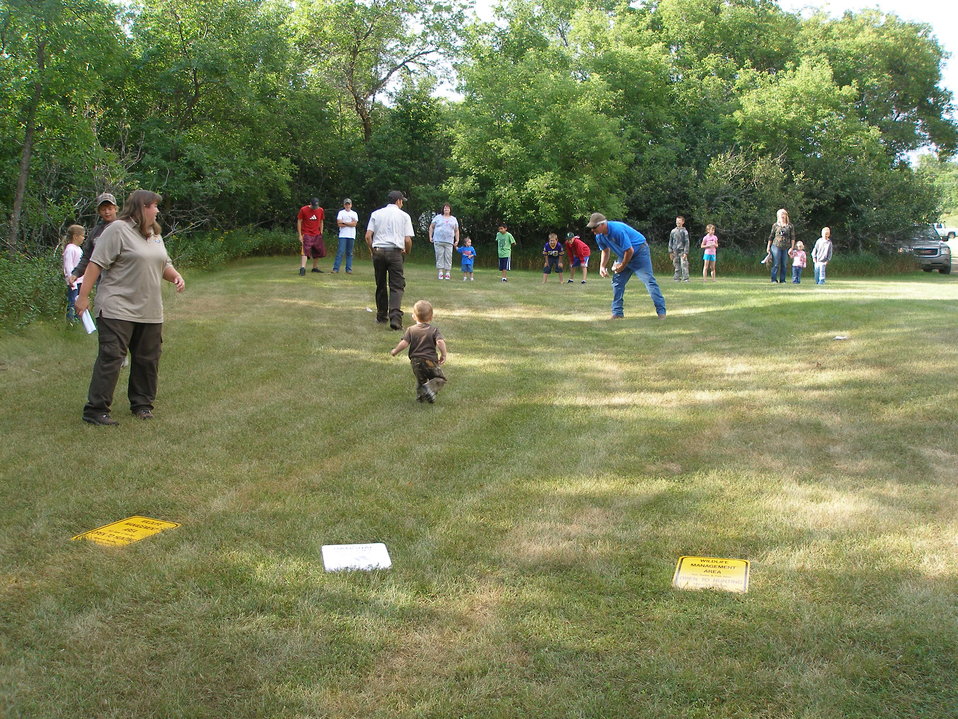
2011 Greenwing Day - Migration Game

Des Lacs National Wildlife Refuge, Tasker's Coulee

At another session, groups were able to join Refuge staff by playing the 'migration game.' Participants learned about the importance of wetlands and refuges to migrating waterfowl. They played the 'ducks' while the Refuge Staff played the 'hunters' and 'obstacles.'